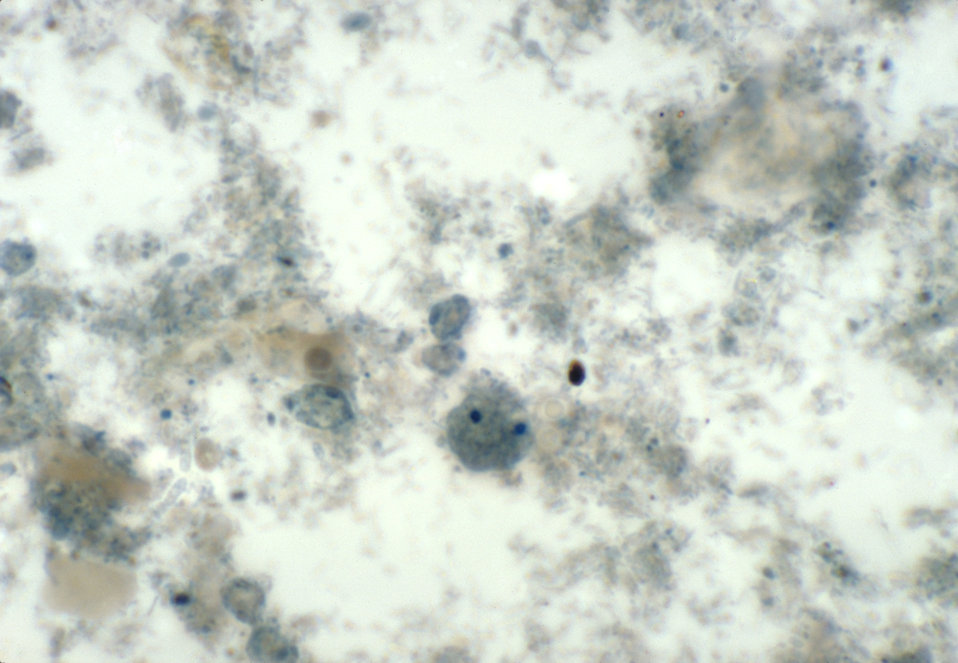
This iron-hematoxylin stained photomicrograph depicts a binucleated amoebic trophozoite of a Dientamoeba fragilis parasite.